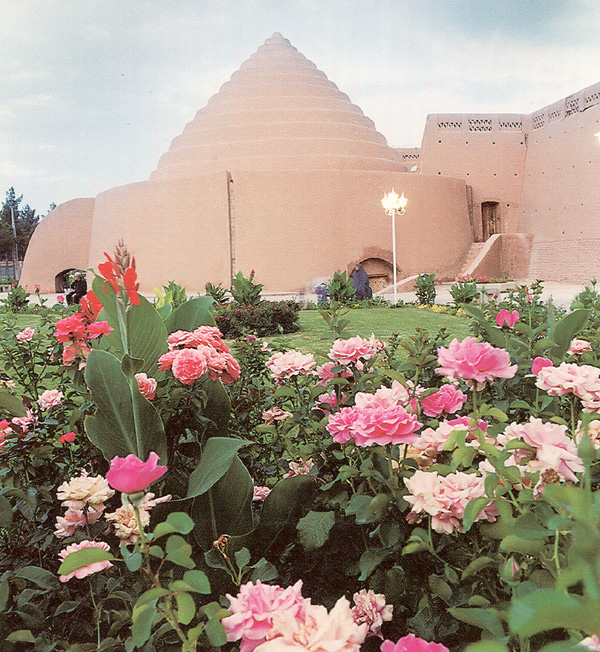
A 'yakhchal', built near Kerman, Iran